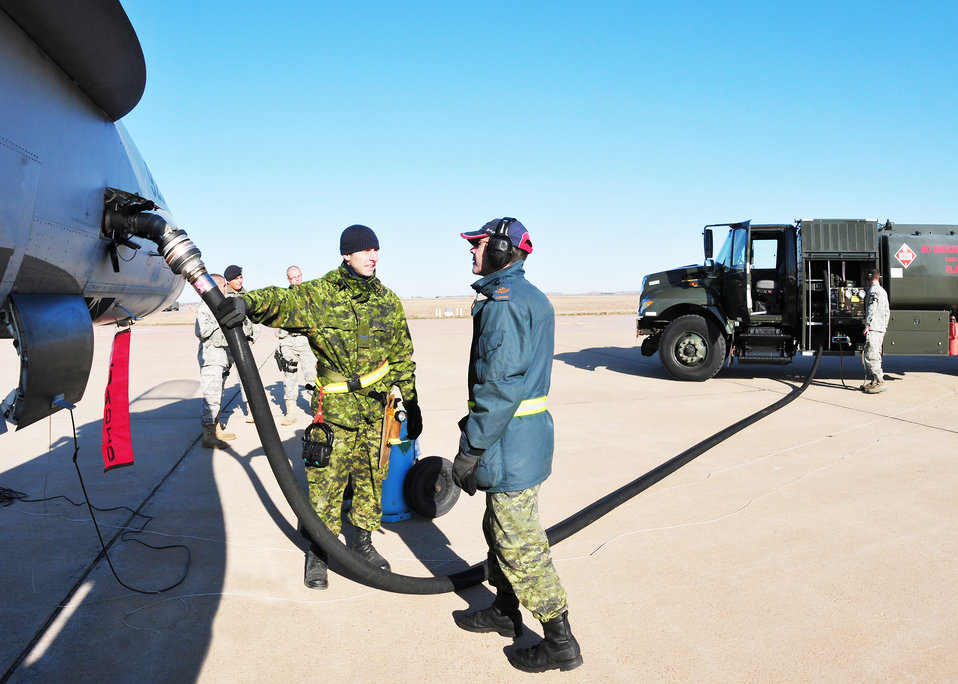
Canadian forward air control training

Two Canadian air force ground crew members from the 25th Tactical Fighter Squadron at Canadian Forces Bagotville in Quebec, Canada, monitor the fuel hose attached to their CF-18 Hornet Dec. 4, 2009, during a refueling operation at Altus Air Force Base, Okla. The Canadians are staging out of Altus AFB while conducting forward air control training at nearby Fort Sill.